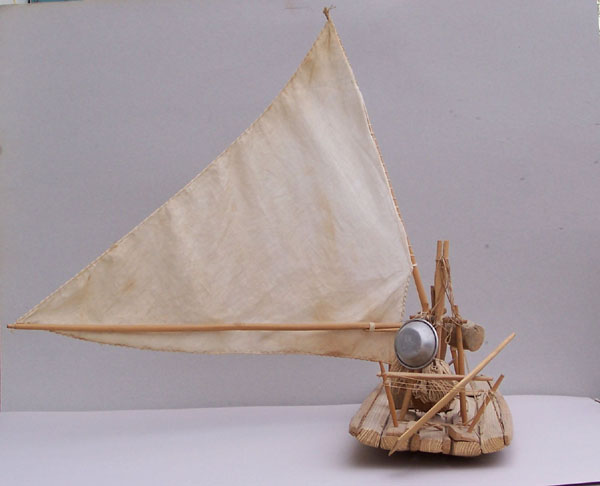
Jangada-Modell, erbaut v. Airton Caetano da Silva, Fortaleza CE Hinteransicht Jangadas: A Brazilian Fishing Craft